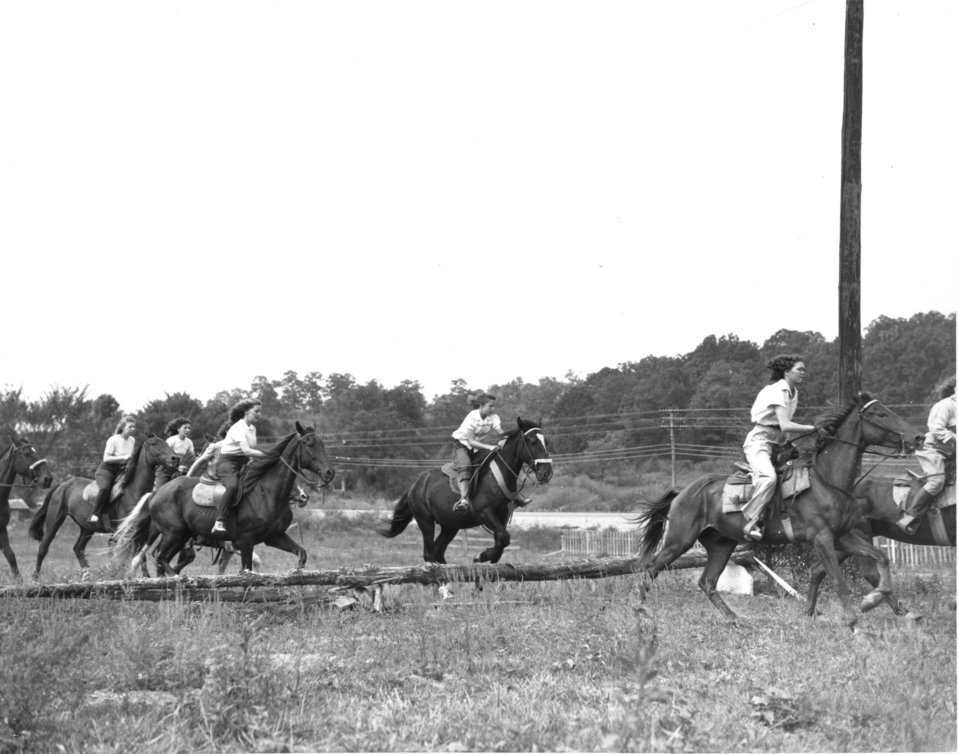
Recreation at Oak Ridge